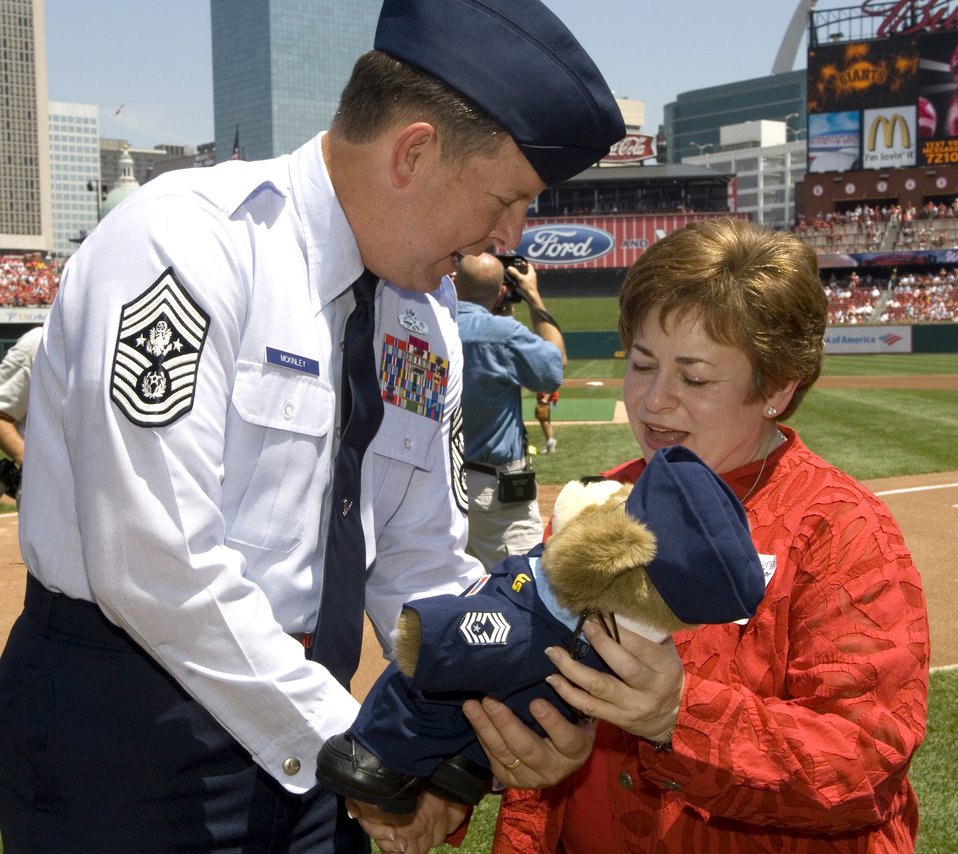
Air Force blue meets Cardinal red

Chief Master Sgt. of the Air Force Rodney J. McKinley presents an Air Force bear to Maxine Clark of St. Louis at a Cardinals game at Busch Stadium on Aug. 6. The game kicked off Air Force Week in St. Louis.